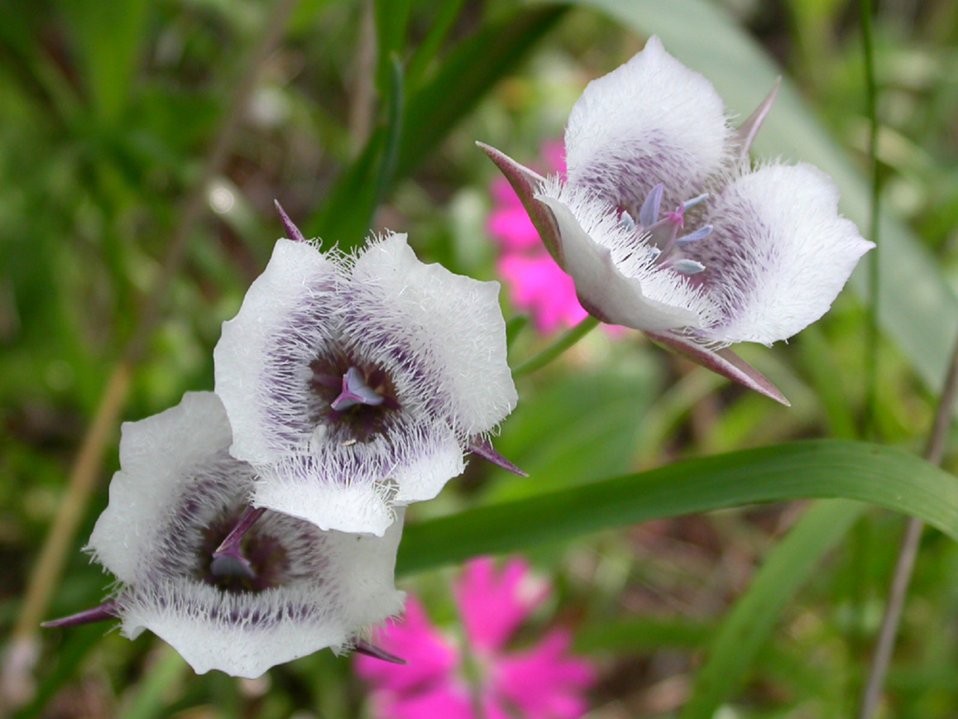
Cat's Paw Benton County meadow restortion project. Ron Exeter, Salem Botany2